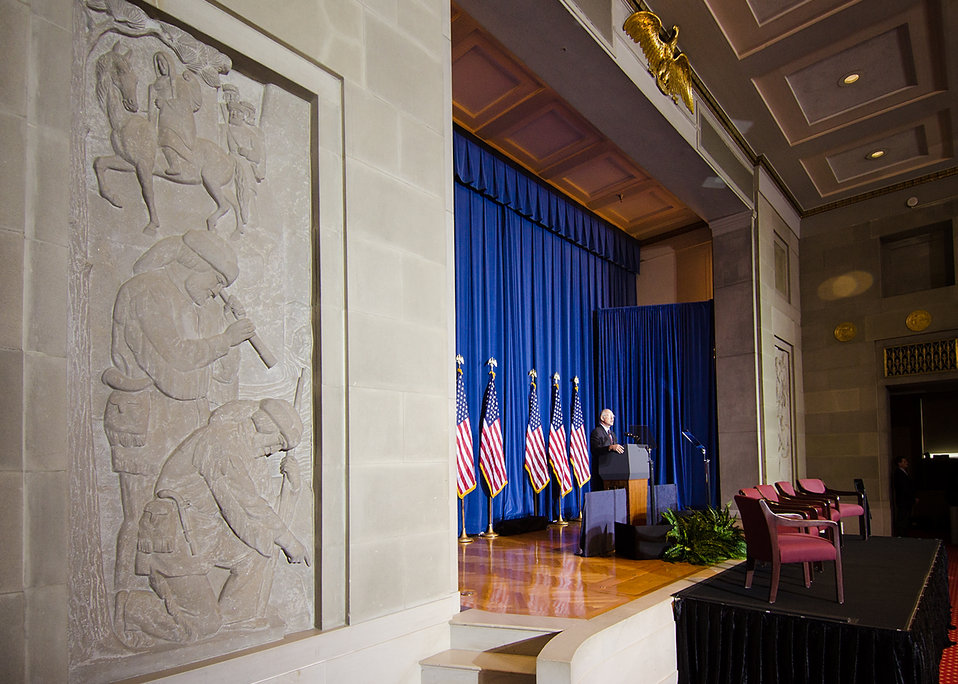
Interior Secretary Ken Salazar addresses the audience at a conservation conference hosted by The White House, “Growing America’s Outdoor Heritage and Economy” at the Department of the Interior, Yates Auditorium in Washington, DC, Friday, March 2, 2012 as part of President Barrack Obama’s, “America’s Great Outdoors Initiative” to spotlight community-driven conservation efforts and discuss how to build their success.